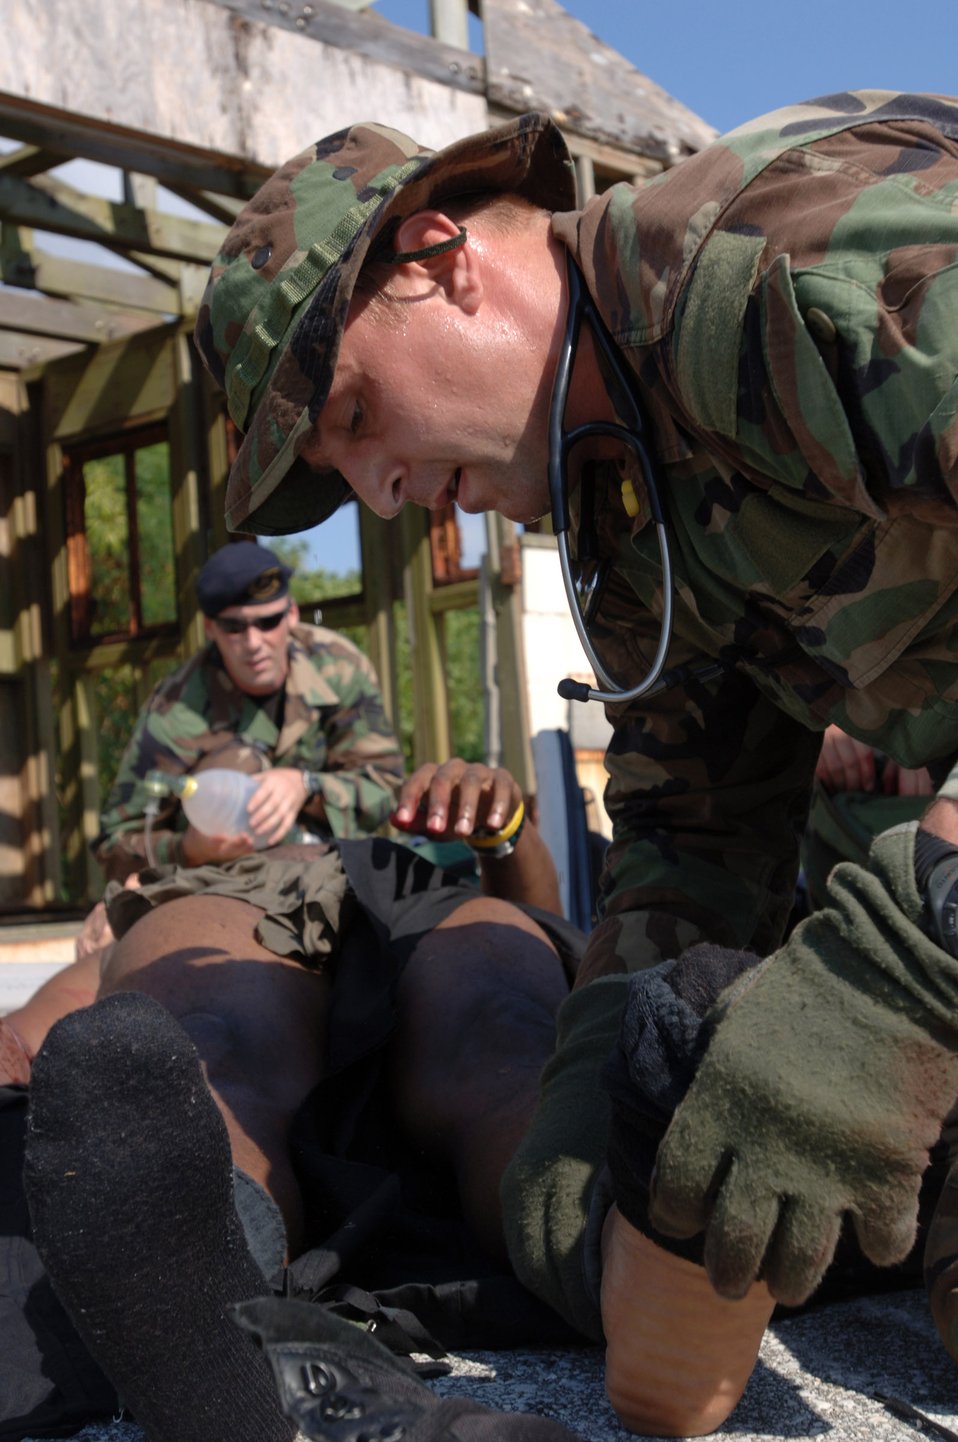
To the rescue

KADENA AIR BASE, Japan -- Senior Airman Sean Cole (foreground) and Tech. Sgt. Keith Hartman provide assistance to Tech. Sgt. Handel Stewart during a situational medical exercise here. During training, pararescuemen